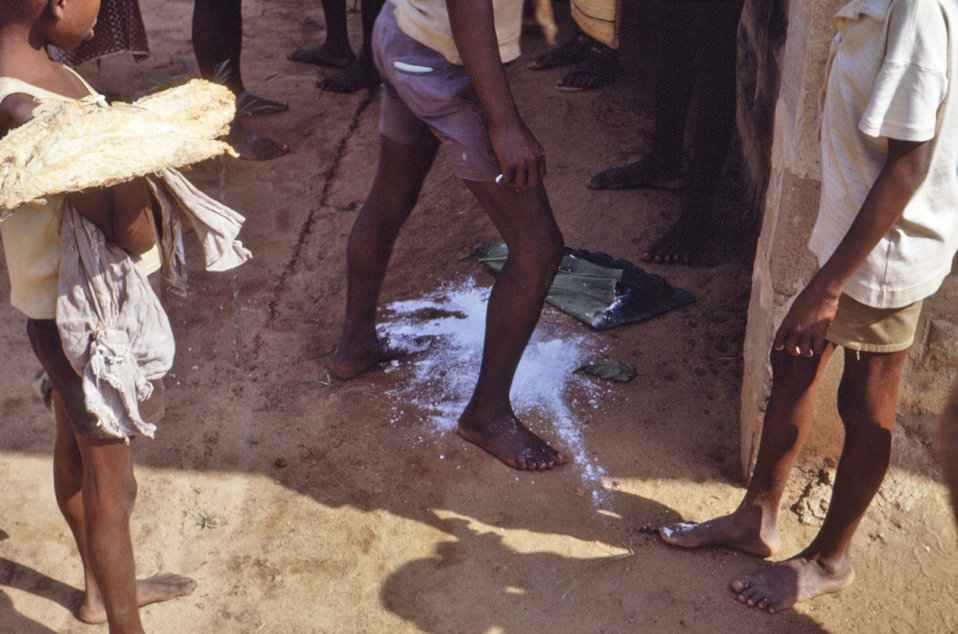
This 1968 photograph depicted a food distribution site located in a refugee relief camp during the Nigerian-Biafran civil war of the late 1960s, where the mainstay were foods high in protein, which helped to counteract the affects of protein deficient diets.